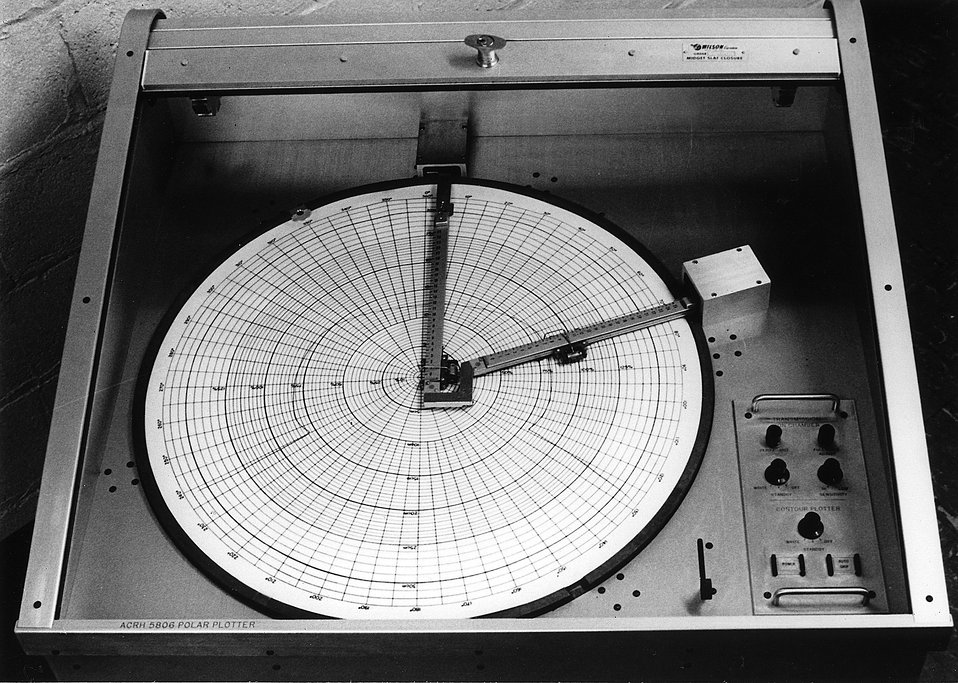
Automatic Patient Contour Plotter....Before radiation treatment of cancer.